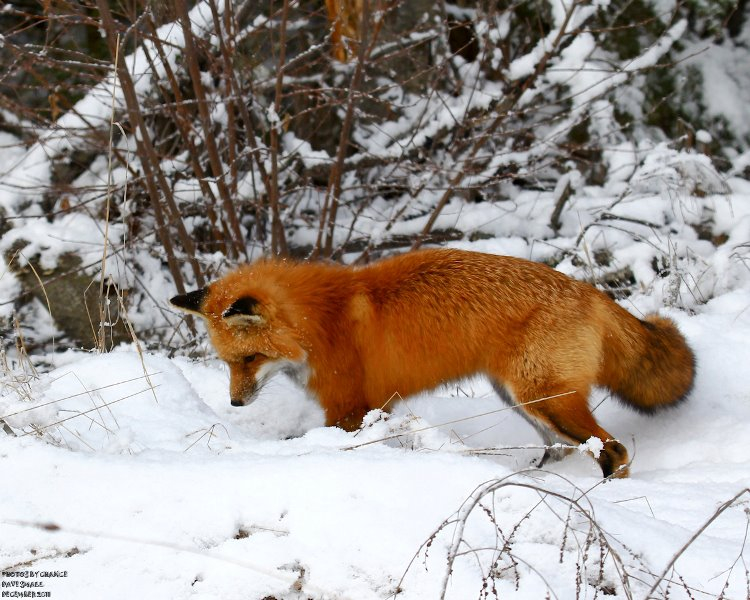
red fox hunting, scene 1

Sunkhaze Meadows National Wildlife Refuge, ME
January 3, 2012